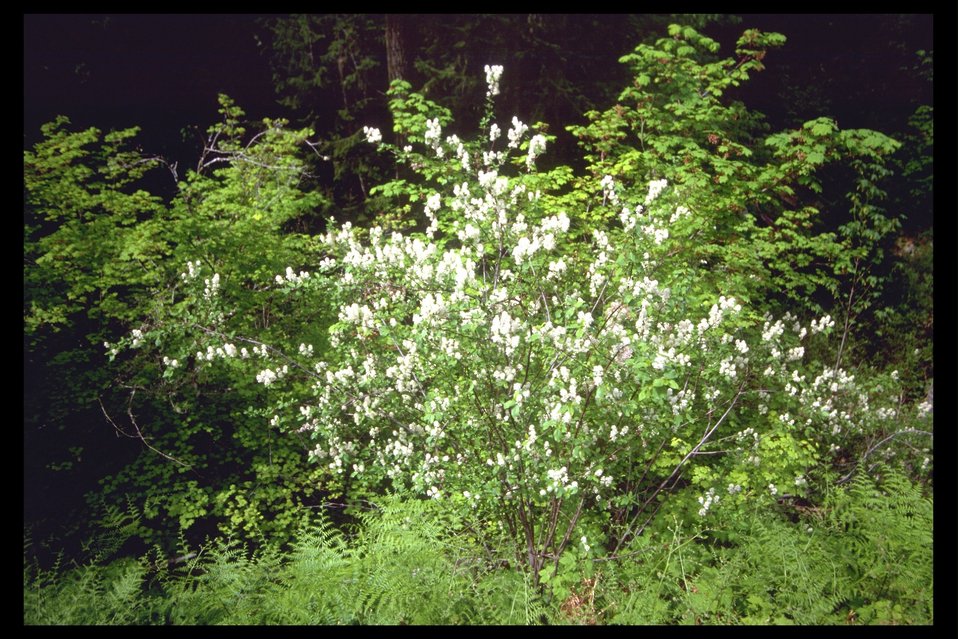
Deerbrush (Ceanothus integerrimus) at Upper Trail Creek.